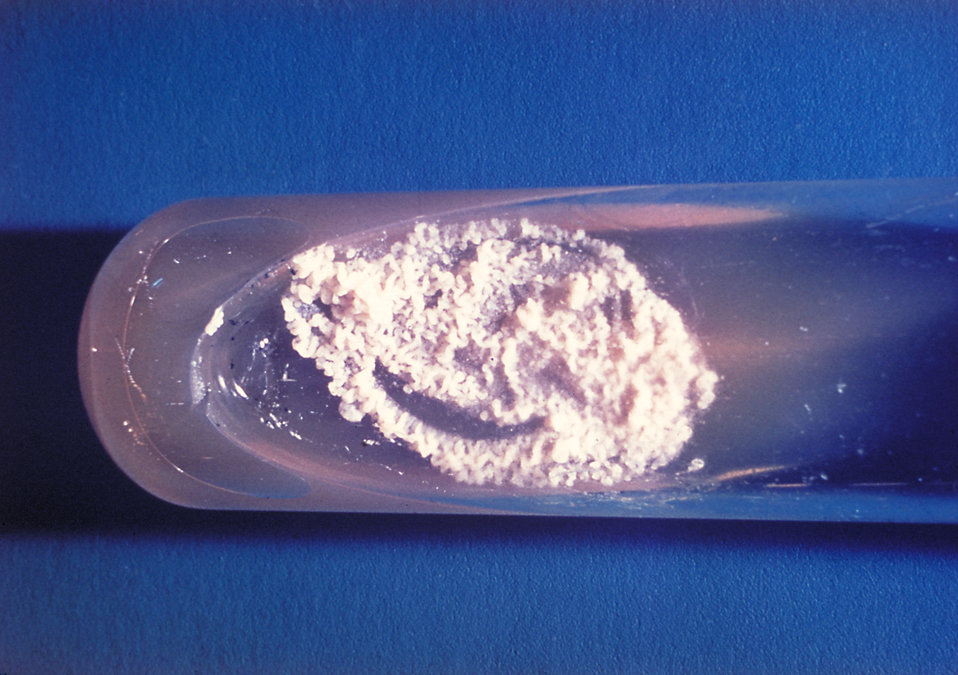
This is a slant culture growing the fungus Paracoccidioides brasiliensis during its yeast phase.